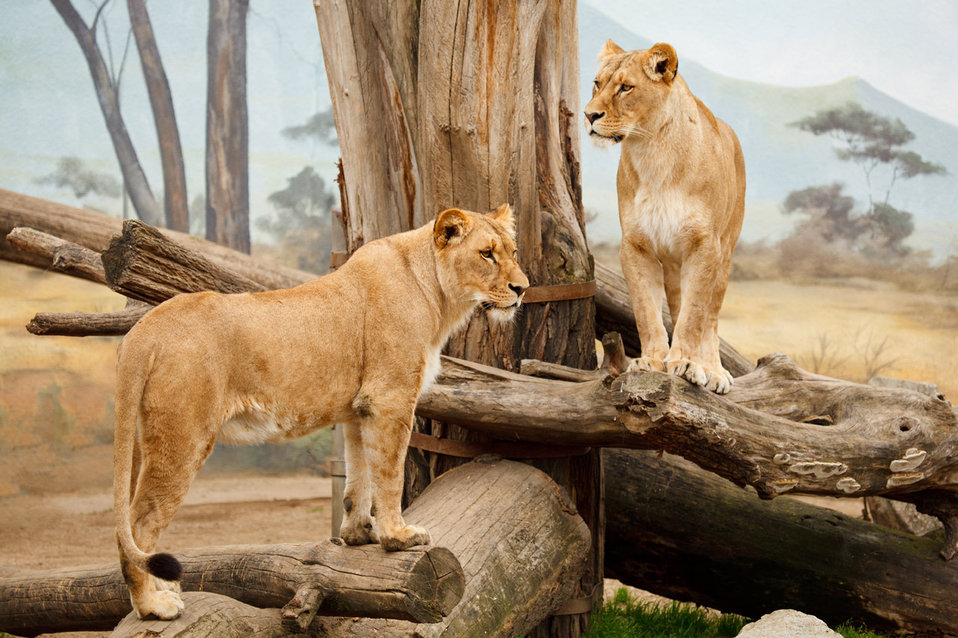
Two lions standing on the logs.